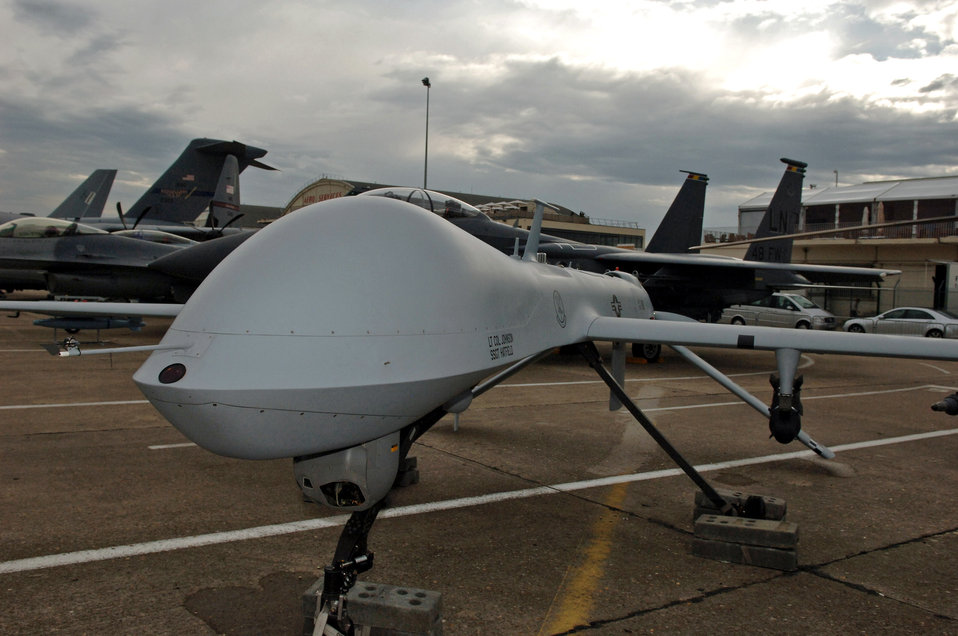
Predator draws attention at Paris Air Show

An MQ-1 Predator displayed stands as a testament to the United States' advanced aerial accomplishments June 19 at the Le Bourget Airport at the International Paris Air Show. The Predator is one of seven Department of Defense aircraft on display at the air show in France.